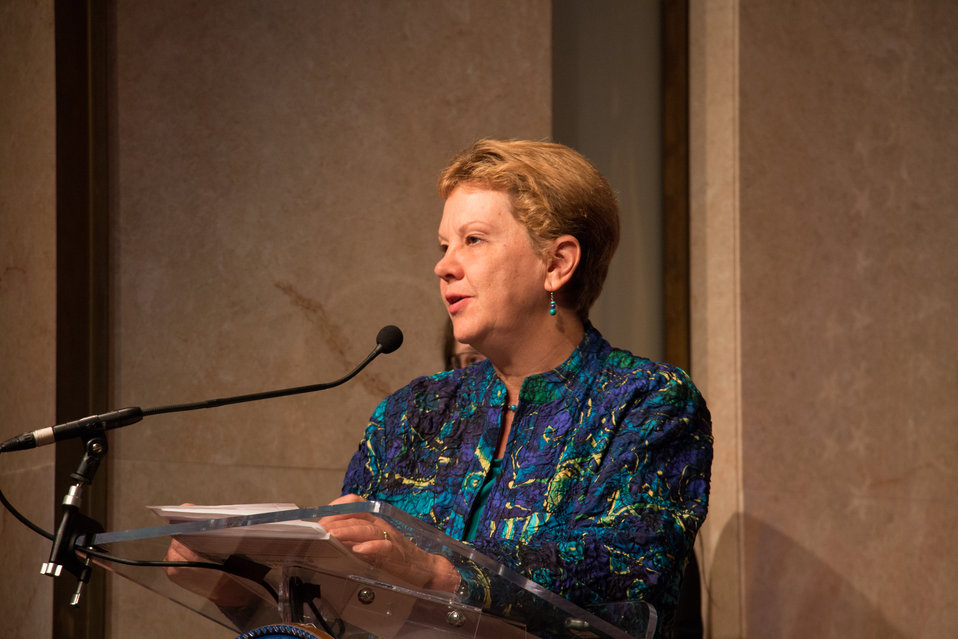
VHAP Launch (222 of 511)